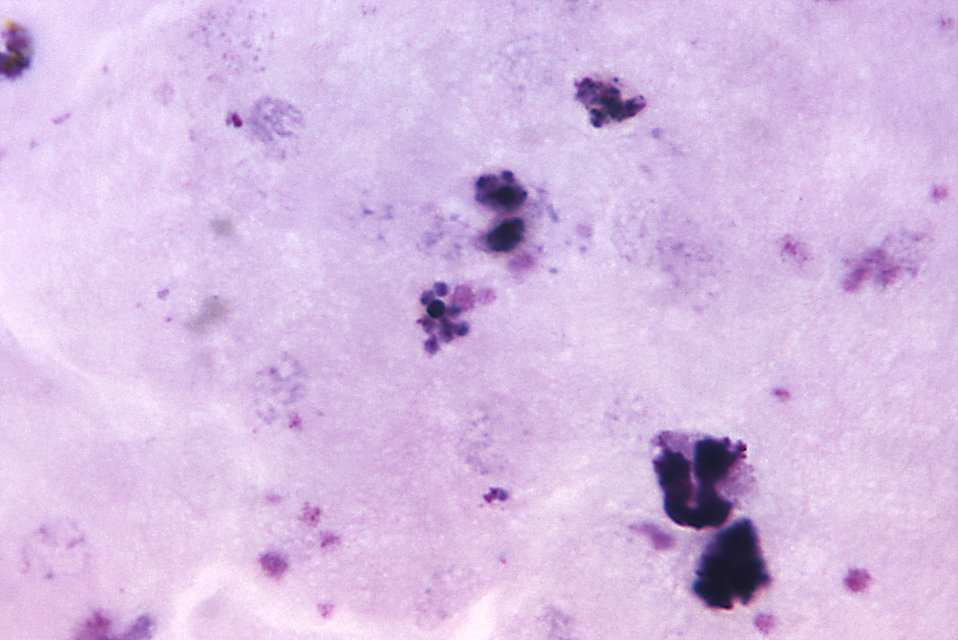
This thick film photomicrograph depicts mature Plasmodium malariae schizonts using Giemsa stain; Magnified 1125X.